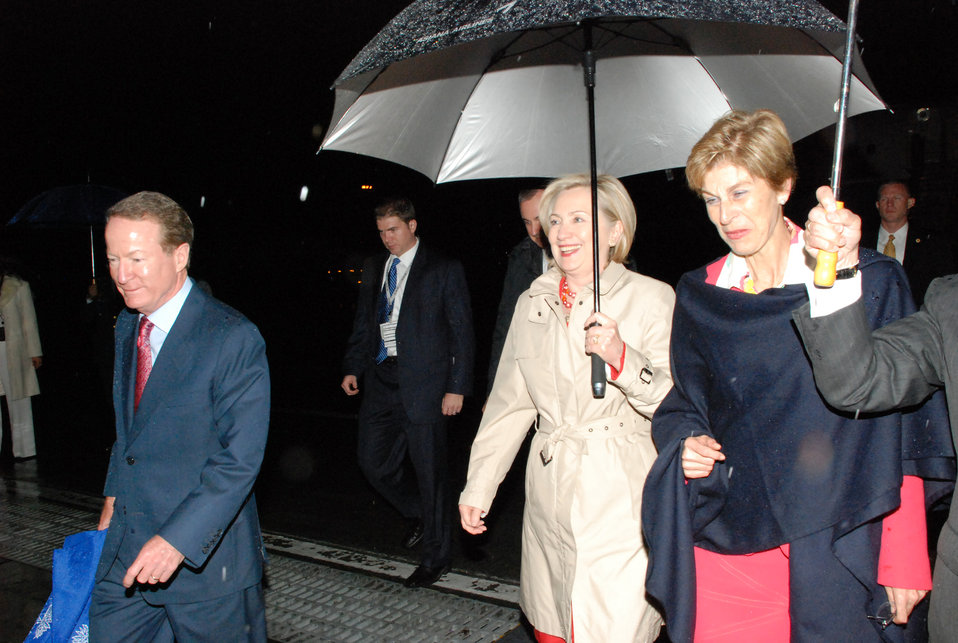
Secretary Clinton Arrives in Colombia

U.S. Secretary of State Hillary Rodham Clinton is accompanied by U.S. Ambassador to Colombia William R. Brownfield and Colombian Ambassador Carolina Barco as she arrives at CATAM airport in Bogotá Colombia June 8, 2010.